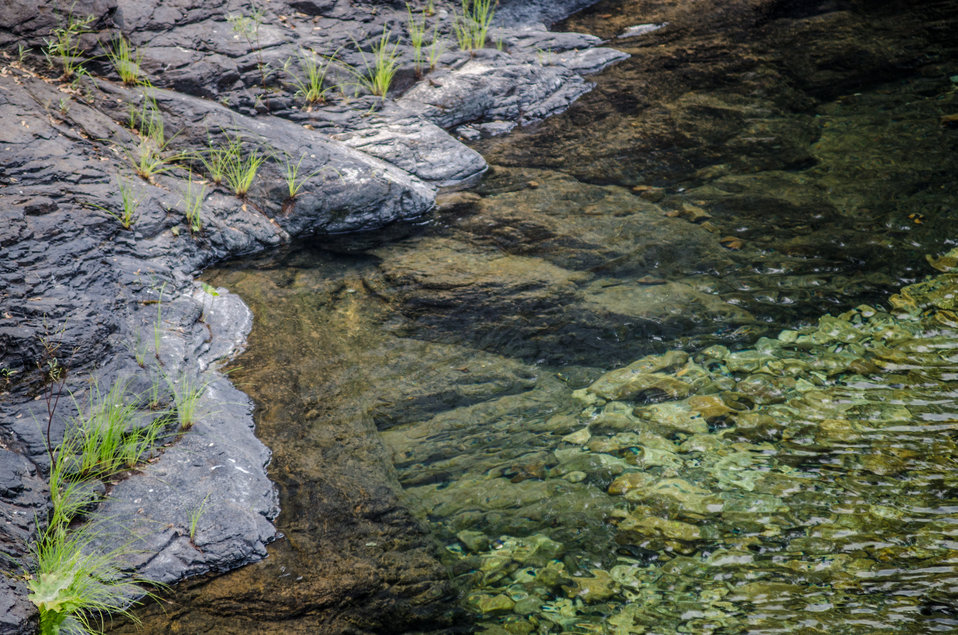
The clear waters of the North Fork Salmon River runs along the south side of Sawyers Bar (right), in Klamath National Forest, Calif., where the Salmon River Complex Wildlands Fire burns miles away to the northwest and west of Etna and Yreka, CA, on Tuesday, Aug. 6, 2013.